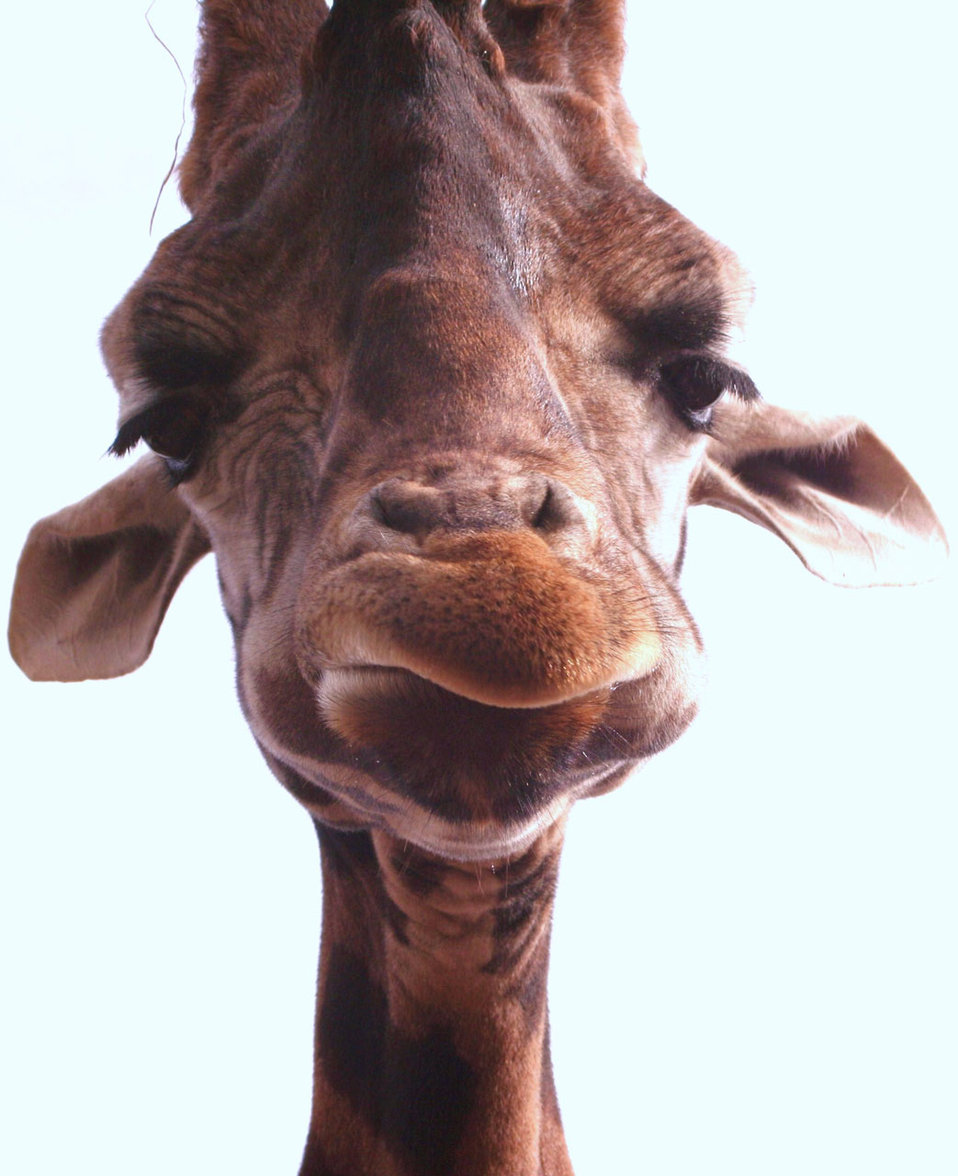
Giraffe looking down.